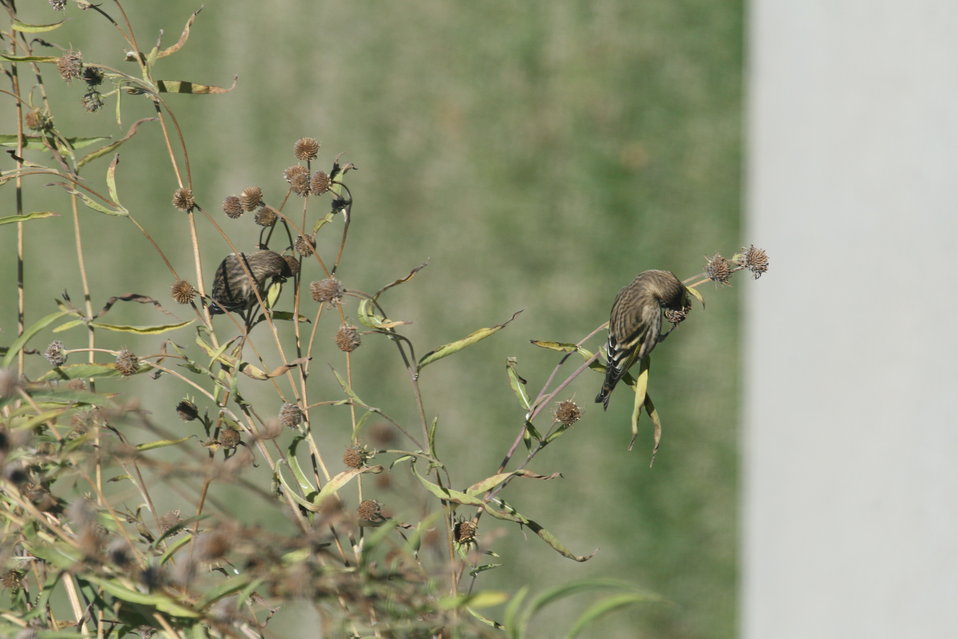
Who's at the Bird Feeder? Pine Siskin

These native plants look pretty, provide educational specimens for visitors, and are a great food source for the birds on the refuge!